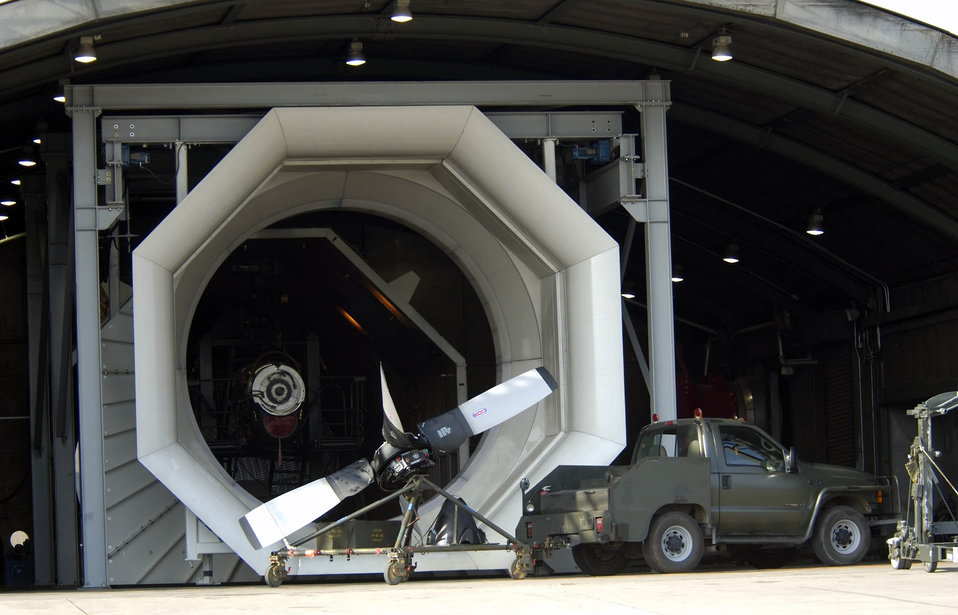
Hush, hush

RAMSTEIN AIR BASE, Germany -- This hush house, used for C-130 Hercules engine repair, was originally made for conducting engine tests for the F-16 Fighting Falcon. The 86th Maintenance Squadron's propulsion flight is a centralized intermediate repair facility making it the focal point for any C-130 engines needing repairs in Europe or for operations Iraqi Freedom and Enduring Freedom.